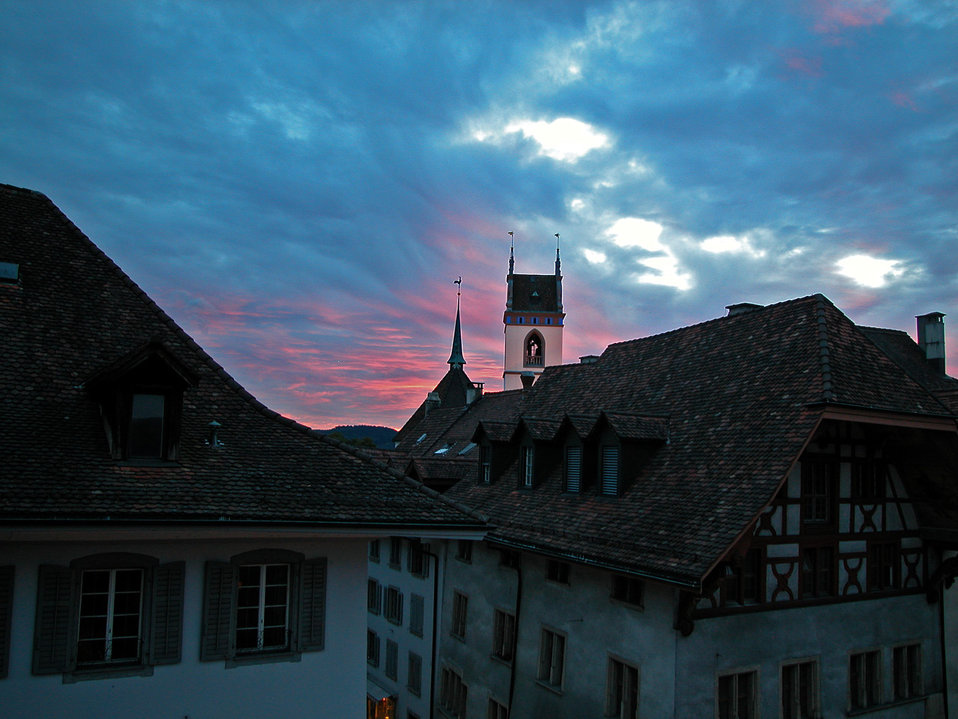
Daecher Altstadt Aarau